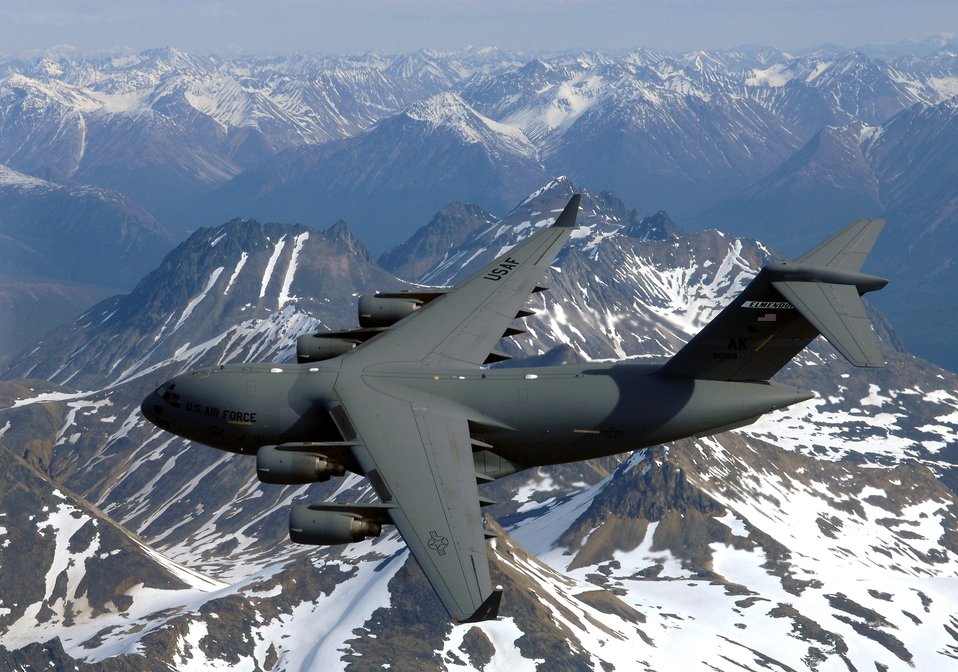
Spirit of Denali

The